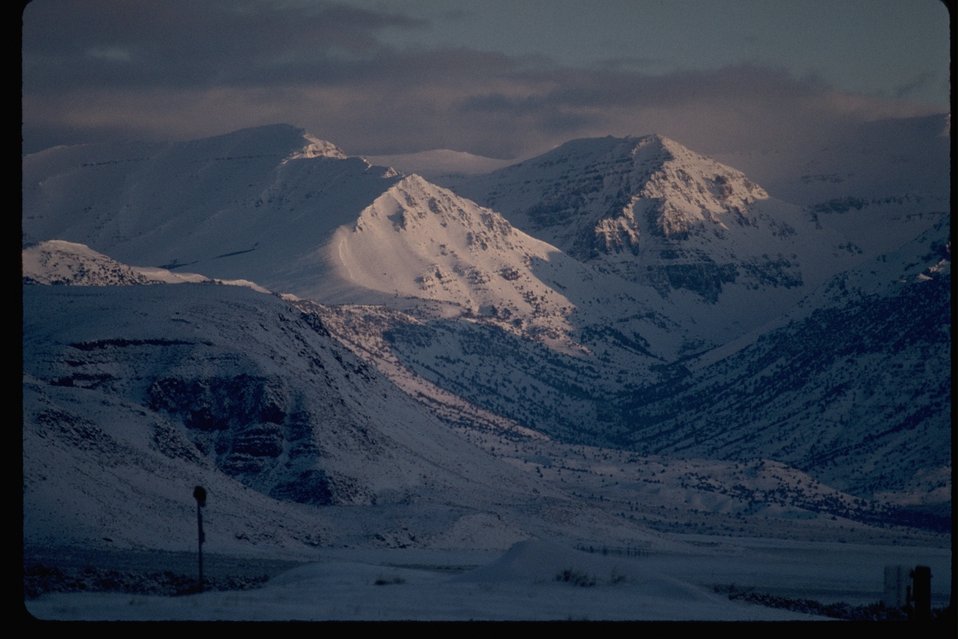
View up the Wild Horse Canyon from the southeast. Winter, North of Fields.